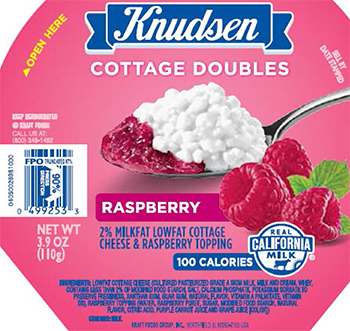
RECALLED – Cottage Cheese products

May 17, 2014 – Product Recall – Kraft Foods Group Voluntarily Recalls Select Cottage Cheese Products Due to Out-of-Standard Storage Temperatures
Certain Knudsen Cottage Cheese, Breakstone’s Cottage Cheese, Simply Kraft Cottage Cheese and Daily Chef Cottage Cheese Products Included in the Recall
.